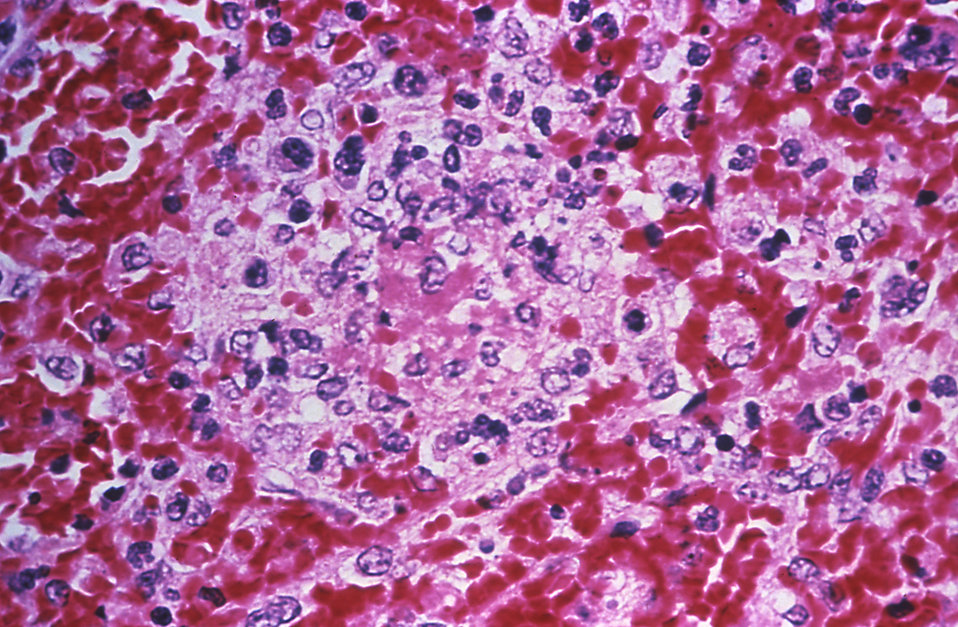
This photomicrograph depicts the histopathologic changes in splenic tissue in a case of fatal human plague; Mag. 400X.